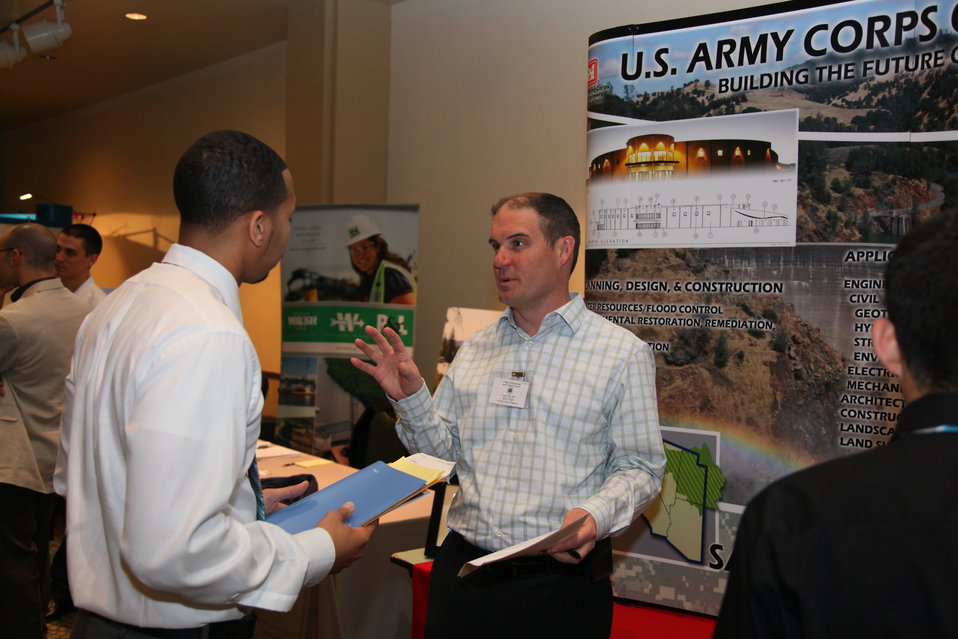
Engineers talk careers at Sac State

Will Hall (center), a civil engineer with the U.S. Army Corps of Engineers Sacramento District, talks with a student about career opportunities in engineering at a California State University-Sacramento career fair in Sacramento, Calif., March 2, 2012. The event offered CSUS students the opportunity to connect with more than 70 employers in the fields of engineering and computer sciences.